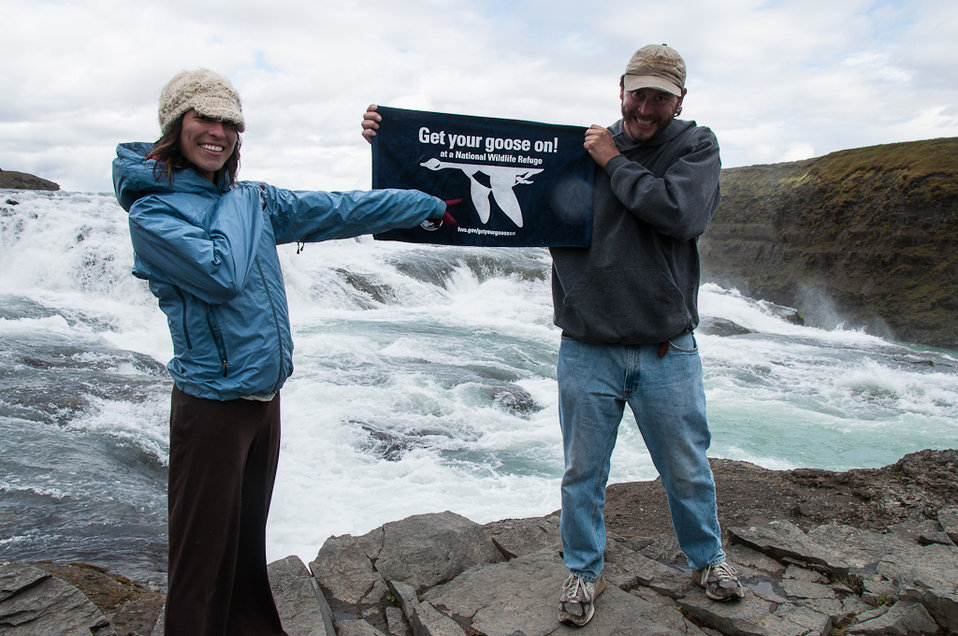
GYGO! in Iceland!